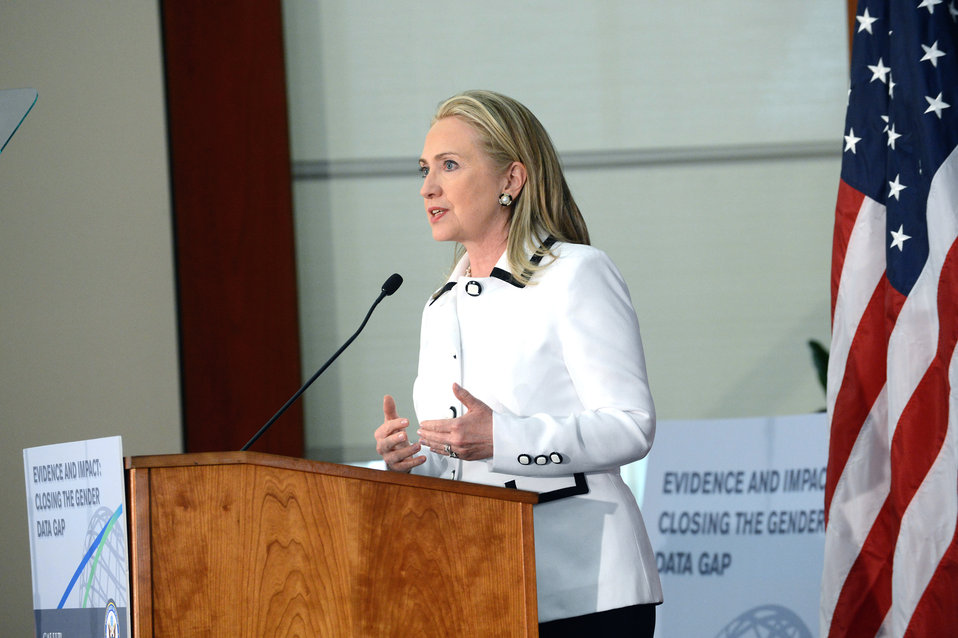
Secretary Clinton Delivers Remarks on 'Evidence and Impact: Closing the Gender Data Gap'

U.S. Secretary of State Hillary Rodham Clinton delivers remarks on Evidence and Impact: Closing the Gender Data Gap at Gallup, Inc., in Washington, D.C., on July 19, 2012.